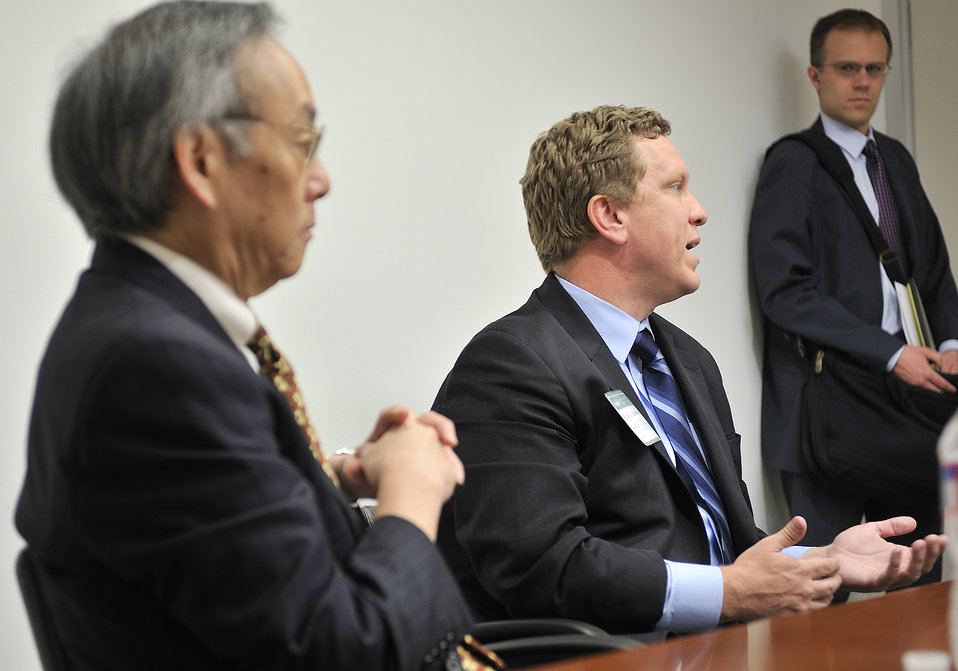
Ken Shipp/DOE Photo

The National Clean Energy Business Plan Competition inspired nearly 300 university teams across the country to create new businesses to commercialize promising energy technologies developed at U.S. universities and the National Laboratories.